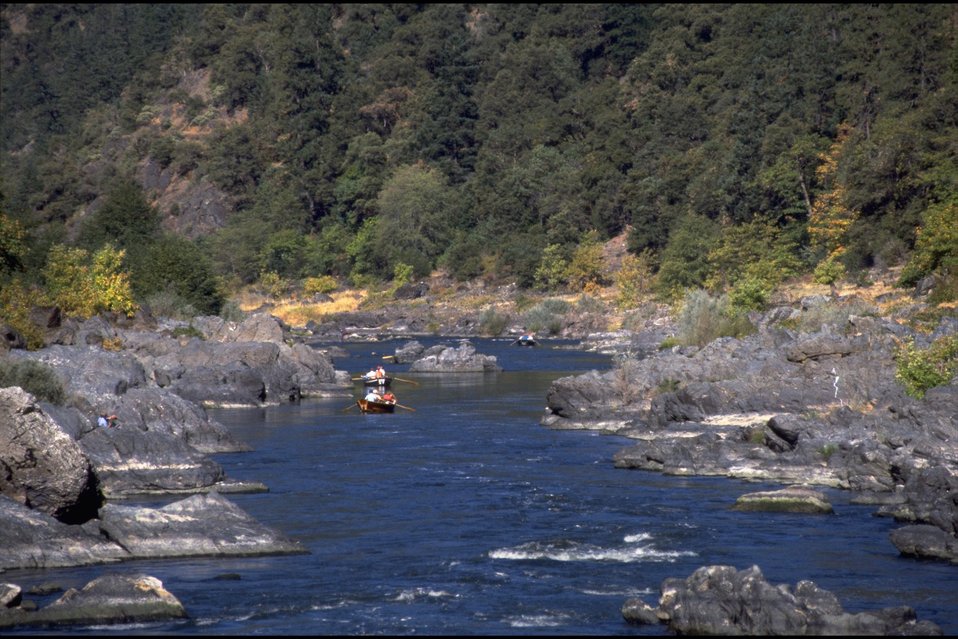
Rogue River - Below Rainie Falls (950 cfs), wild section. Drift boat fishing.